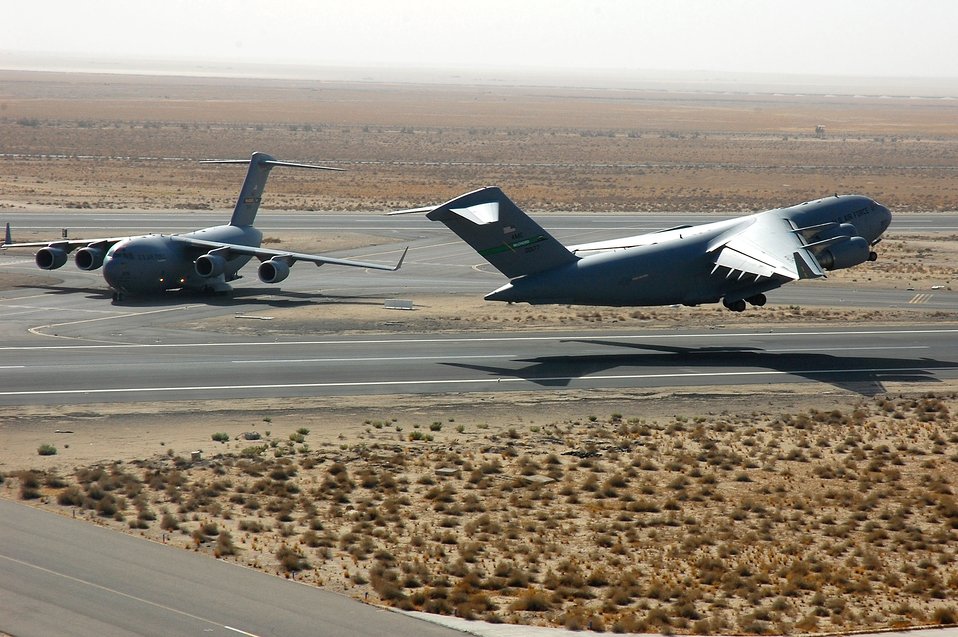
In control

A C-17 Globemaster III from McChord AFB, Wash., takes off while passes a taxiing C-17 Nov. 2 in Southwest Asia. The C-17 rapidly delivers troops and all types of cargo to main operating bases or directly to forward bases in the deployment area.